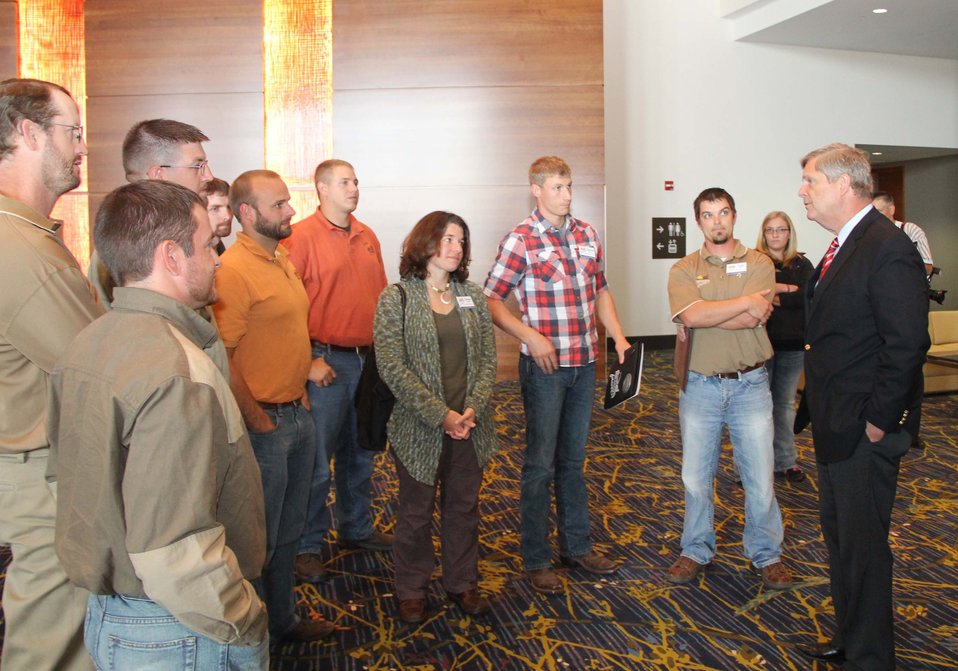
Agriculture Secretary Tom Vilsack addresses a small group of attendees at the rally for Iowa’s Outdoor Legacy event in Des Moines, IA on Saturday, Sept. 29, 2012. The event included several speakers and panelists who highlighted challenges and opportunities for conservation in Iowa, as well as lessons learned around the country and world. Secretary Vilsack’s comments focused on the important role conservation plays in helping build a stronger rural America through better care for the environment and improved economic opportunities.